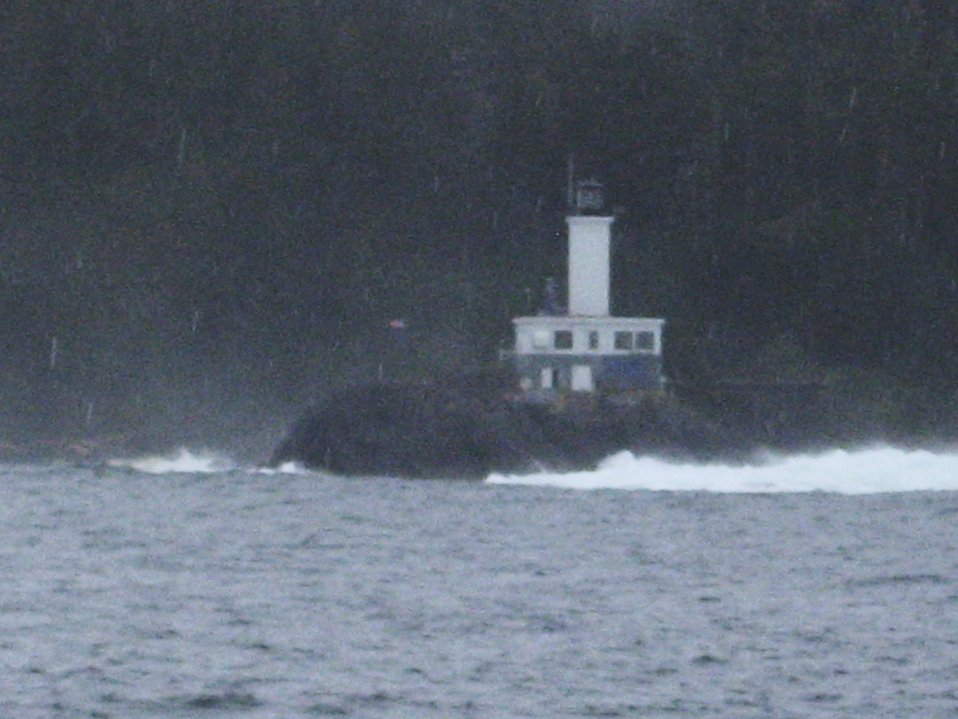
Cape Decision Lighthouse